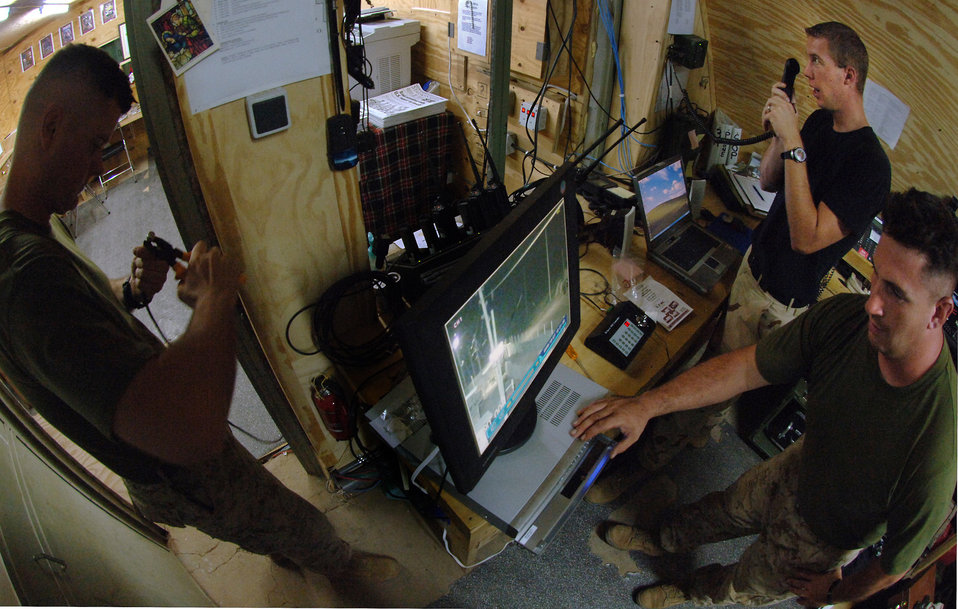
Combined Joint Task Force-Horn of Africa

Senior Airman Jeremy Cole, right, performs a daily communications check with Combined Joint Task Force - Horn of Africa headquarters in Djibouti some 420 nautical miles north, while Marine reservists Sergeant Michael Phillips and Corporal Justin Yoch install and field test the Contingency Operating Location Bilate camp's new surveillance system.